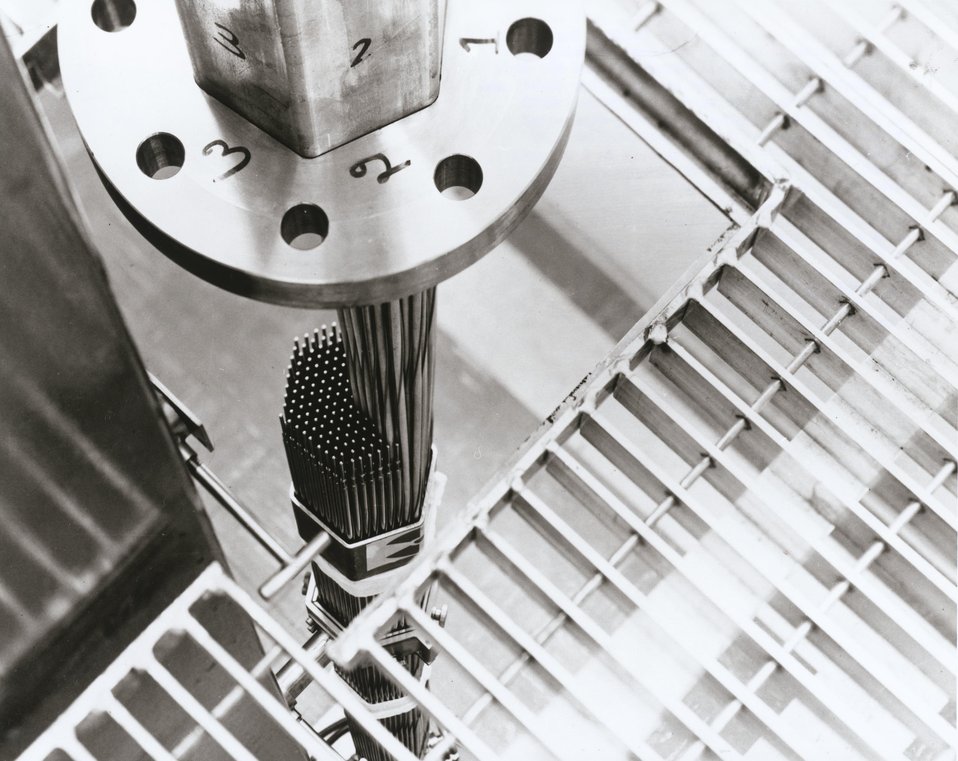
Special fuel assembly tests being conducted Hanford Engineering Lab. c.1972